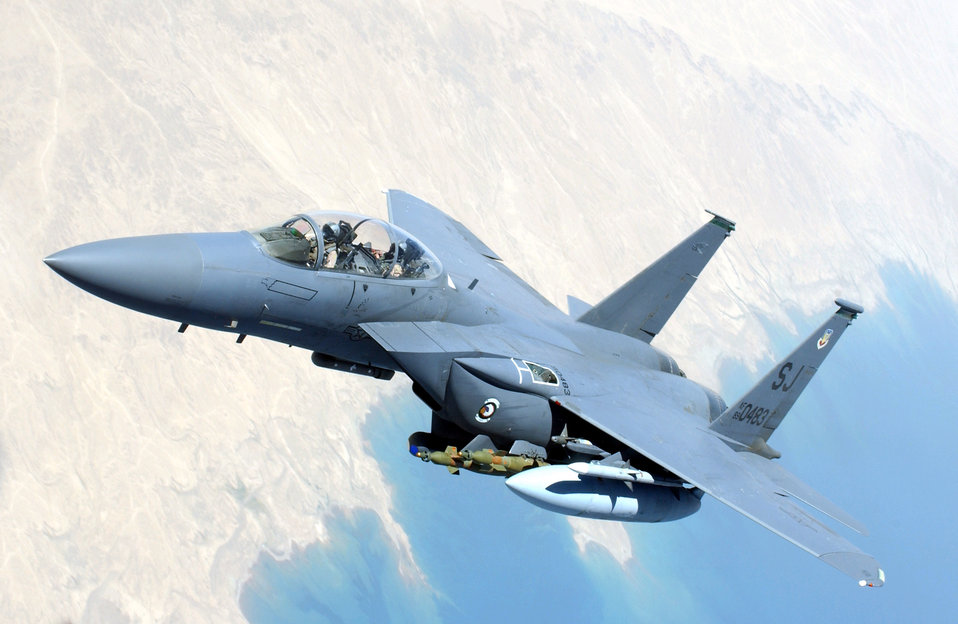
Iraqi Freedom

OVER IRAQ -- An F-15 Strike Eagle flies through the sky during a combat mission July 6 in support of Operation Iraqi Freedom.